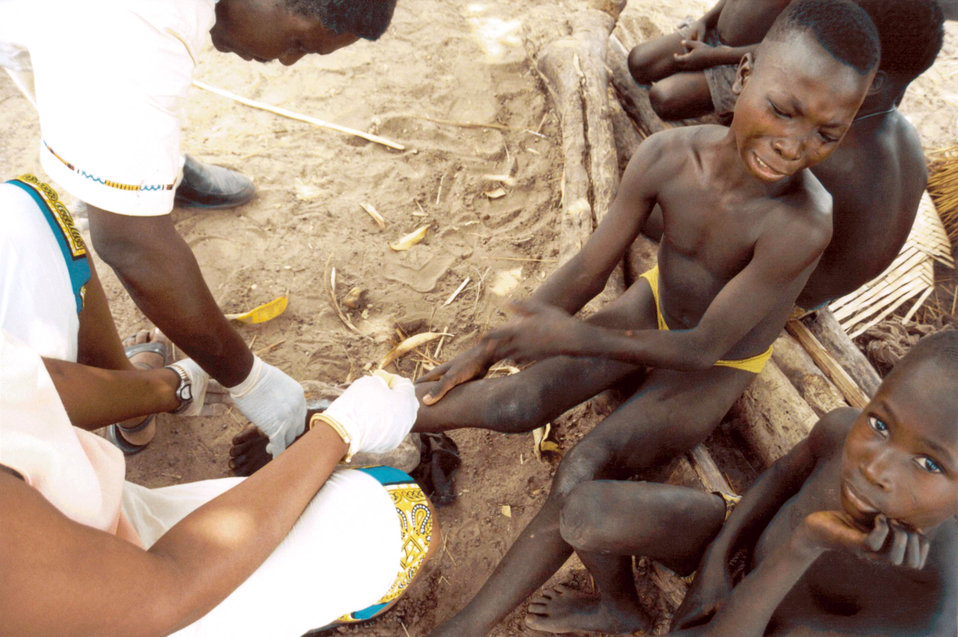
This image depicts the painful suffering being sustained by a young girl named Akouma, who is infected with Guinea worm, Dracunculus medinensis. Two health workers are extracting an adult worm from the girl's lower right leg. The Guinea worm has migrated, over a period of approximately one year, to its site of emergence from its subcutaneous location, out through a ruptured blister, in order to release its eggs in a local pond or dam. This blister causes a very painful burning sensation and eventually (within 24 to 72 hours) ruptures. Once the white, spaghetti-like worm emerges from the wound, it is pulled out only a few centimeters each day, and wrapped around a small stick or piece of gauze. Sometimes a worm can be pulled out completely within a few days, but this painful process often takes weeks.